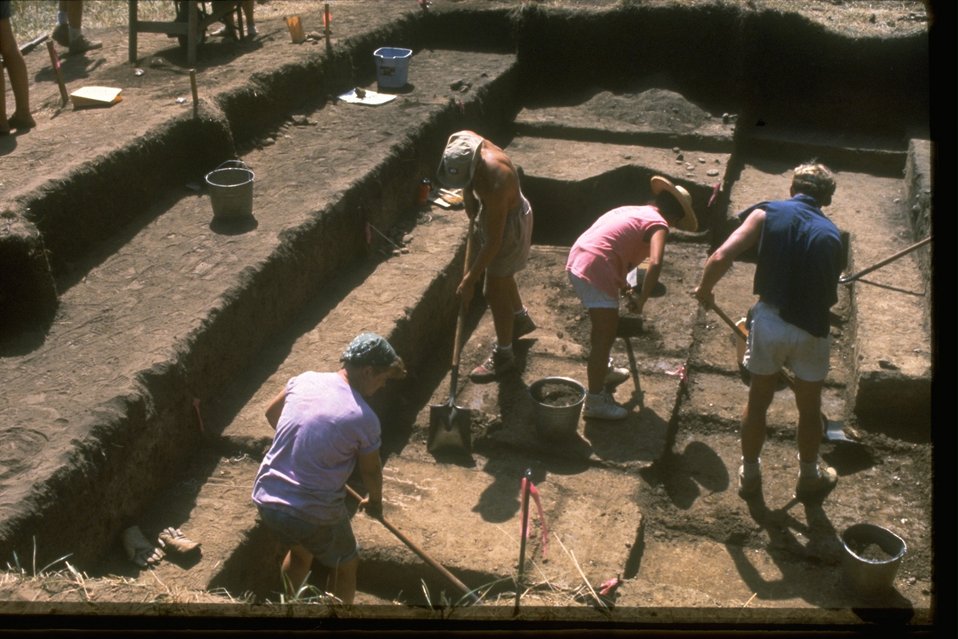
Archaeology dig.